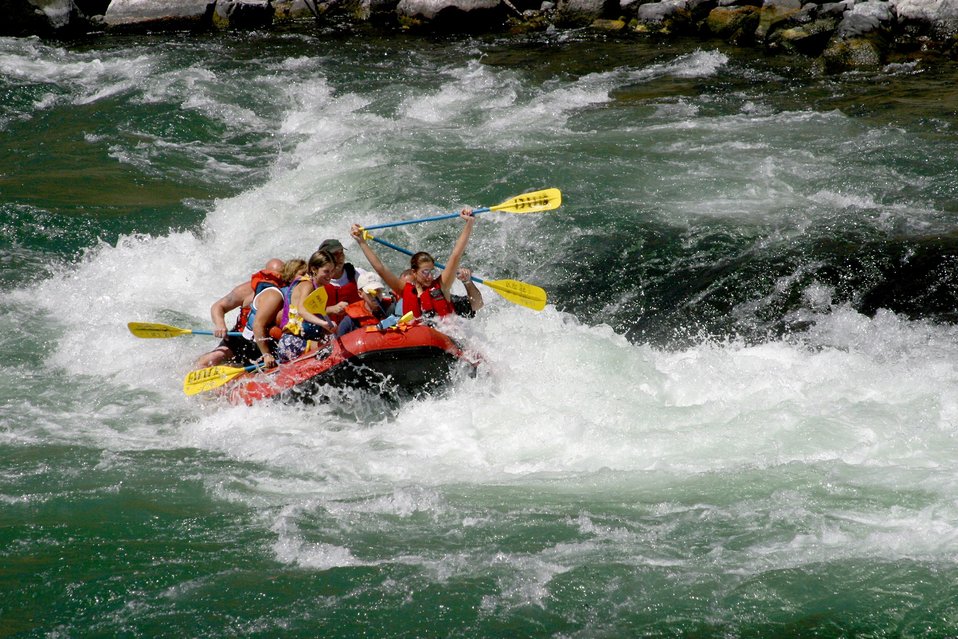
Boxcar Rapids class III, has large waves with a small drop that form turbulent currents. 7/26/03 Pelton Dam 3600 cfs: Moody Rapids 4300 cfs.